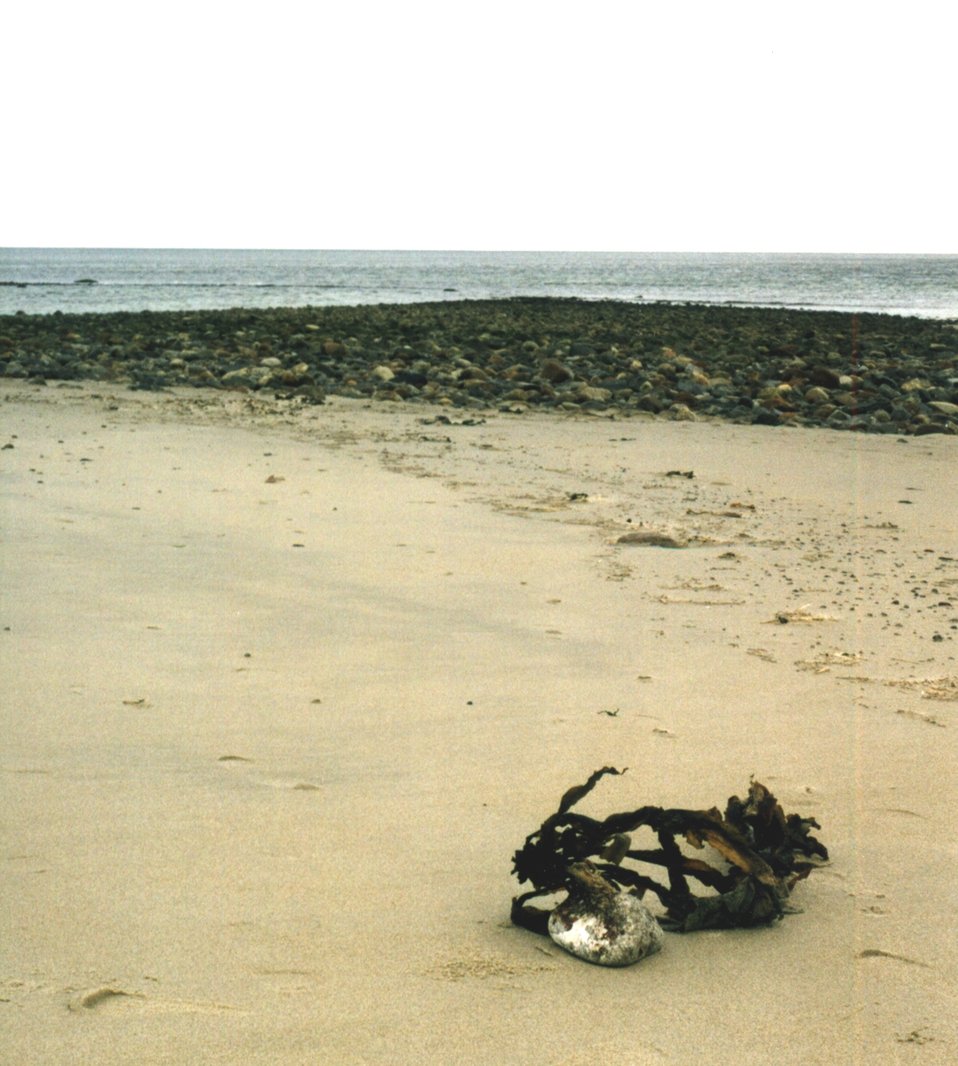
Glacial cobble returned to land as kelp ripped out during storm and carried the cobble back to shore.